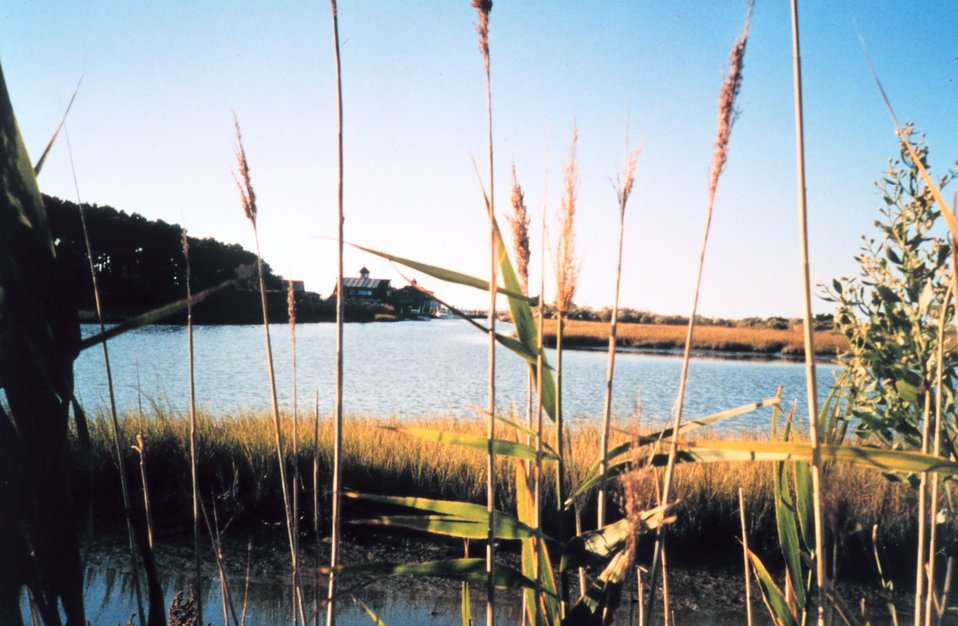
Marsh at Port Isobel